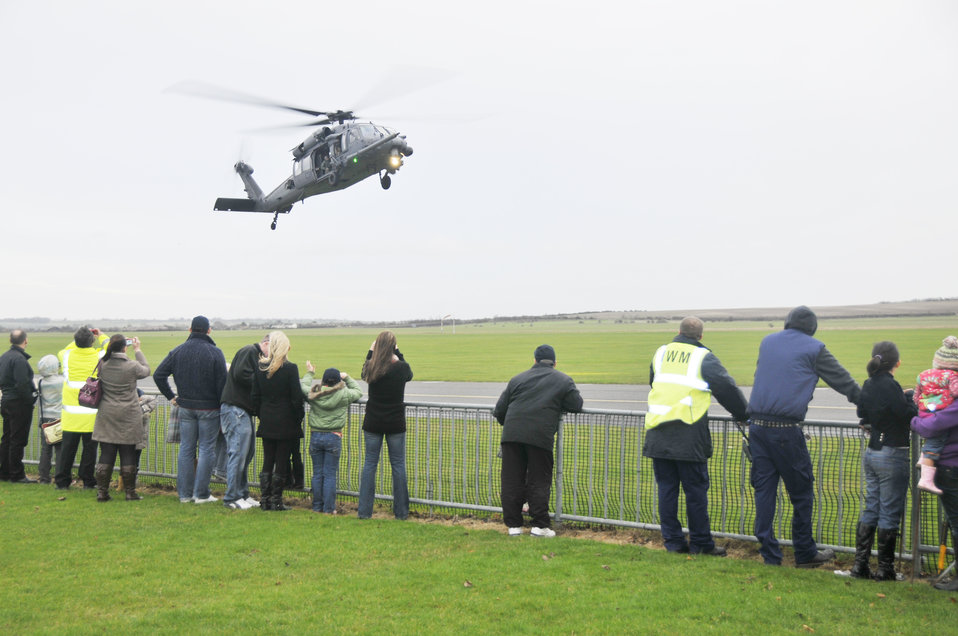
Lakenheath Airmen held Christmas party for special children

An HH-60G Pave Hawk from Royal Air Force Lakenheath, England, gives Santa Claus a ride to the Imperial War Museum Dec. 5, 2009 at Duxford, England. Volunteers from the 48th Fighter Wing hosted a party at the museum for terminally and seriously ill children.